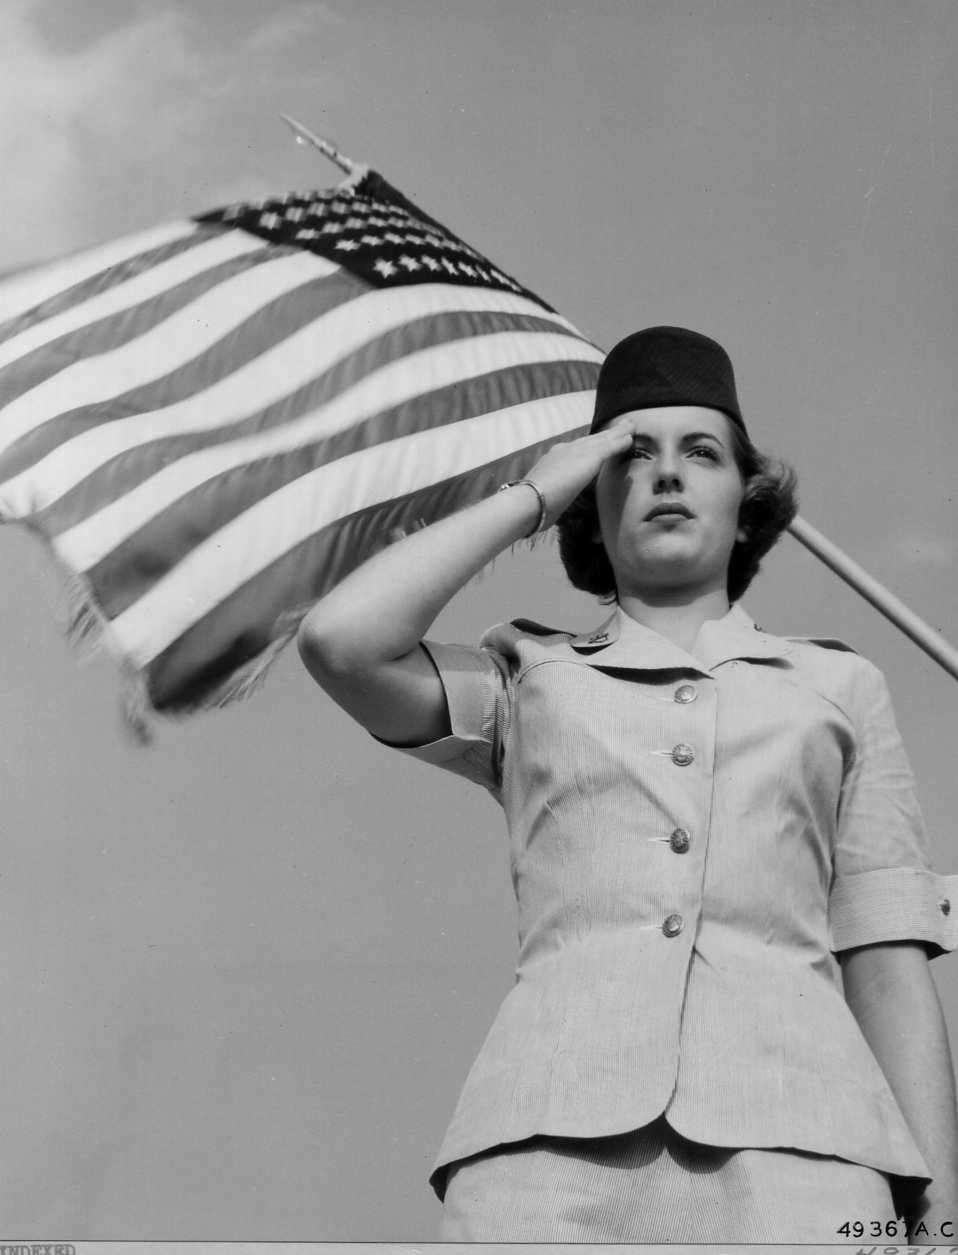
WAF Officer candidates

1950's -- A salute is a gesture of courtesy given to a superior officer by a subordinate -- that's what it says in the book. At Lackland Air Force Base, Texas, WAF Officer candidates find that the salute is more than courtesy. It is a gesture of comradeship, of pride in one's self and in the Air Force. November 1952